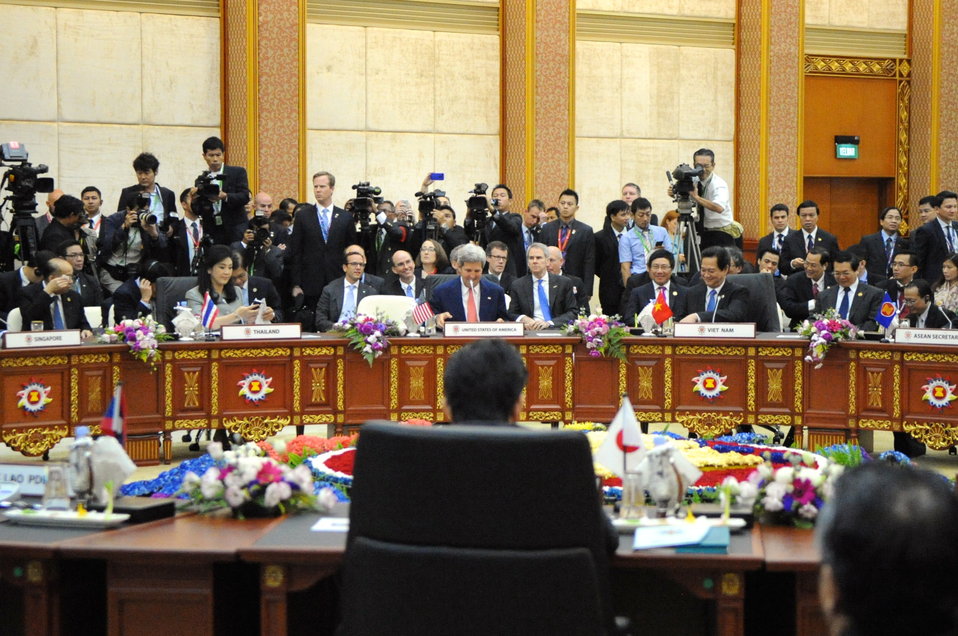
Secretary Kerry Participates in East Asia Summit

U.S. Secretary of State John Kerry prepares for the start of the East Asia Summit in Bandar Seri Begawan, Brunei, on October 10, 2013.